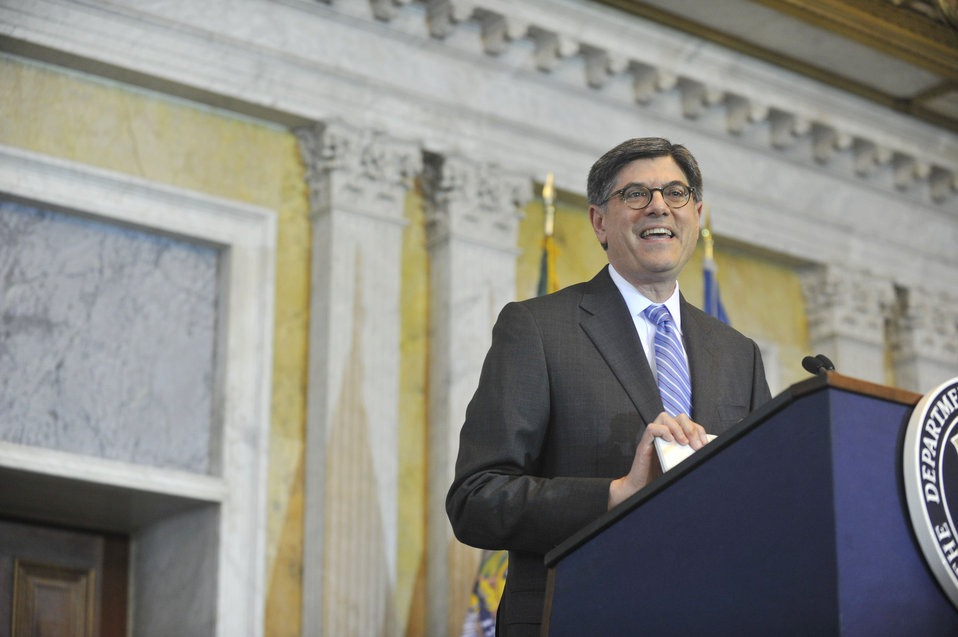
Secretary Lew delivers remarks at Naturalization Ceremony at Treasury

July 3, 2013 - Secretary Lew addressed thirty special guests in Treasury’s historic Cash Room as “fellow Americans” for the first time in their lives.